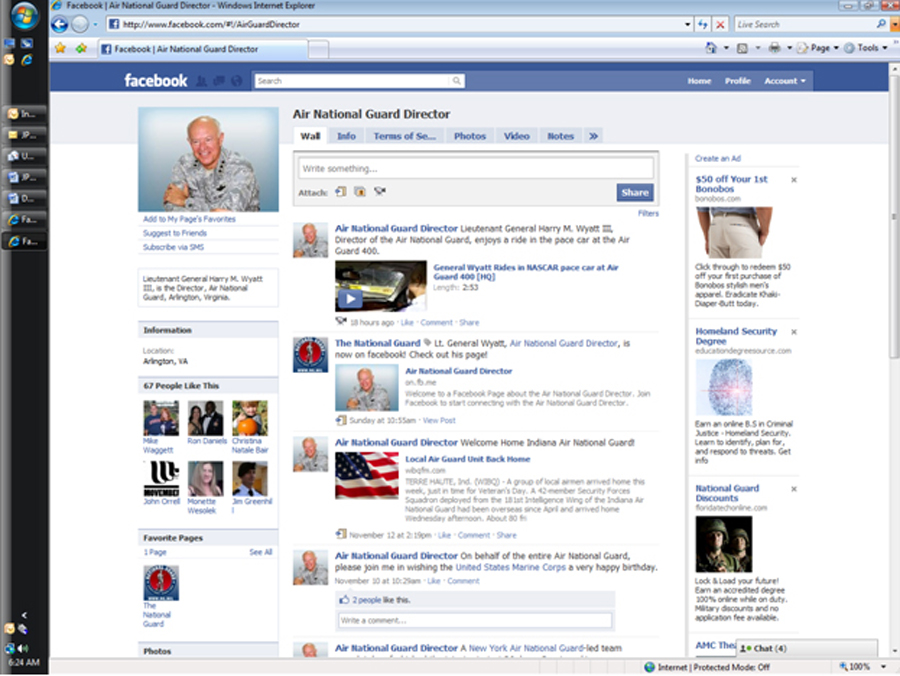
AG Facebook

Facebook offers virtual face time with Air Guard director